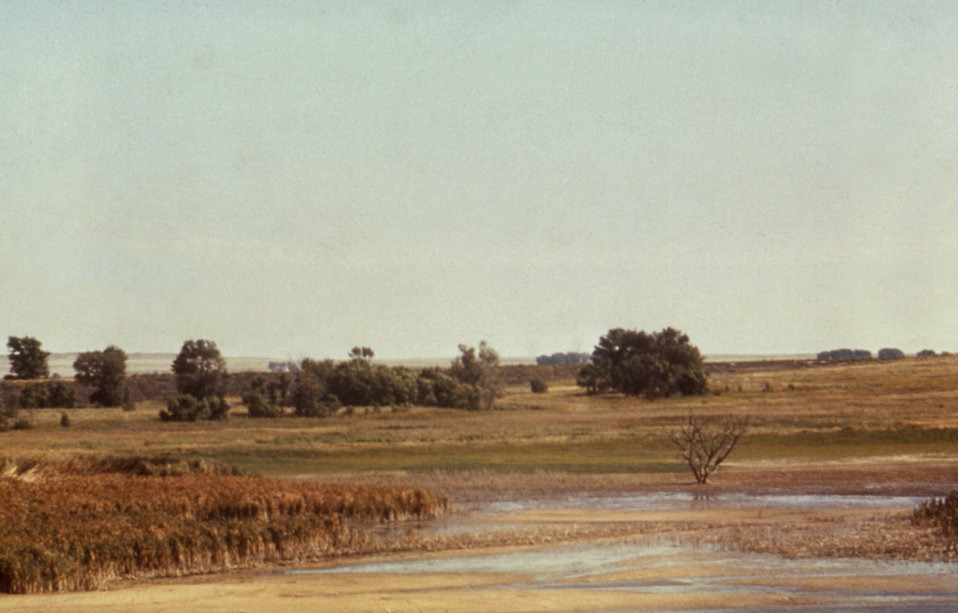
This 1976 photograph shows the shallow edges of the Julesburg Reservoir in Colorado